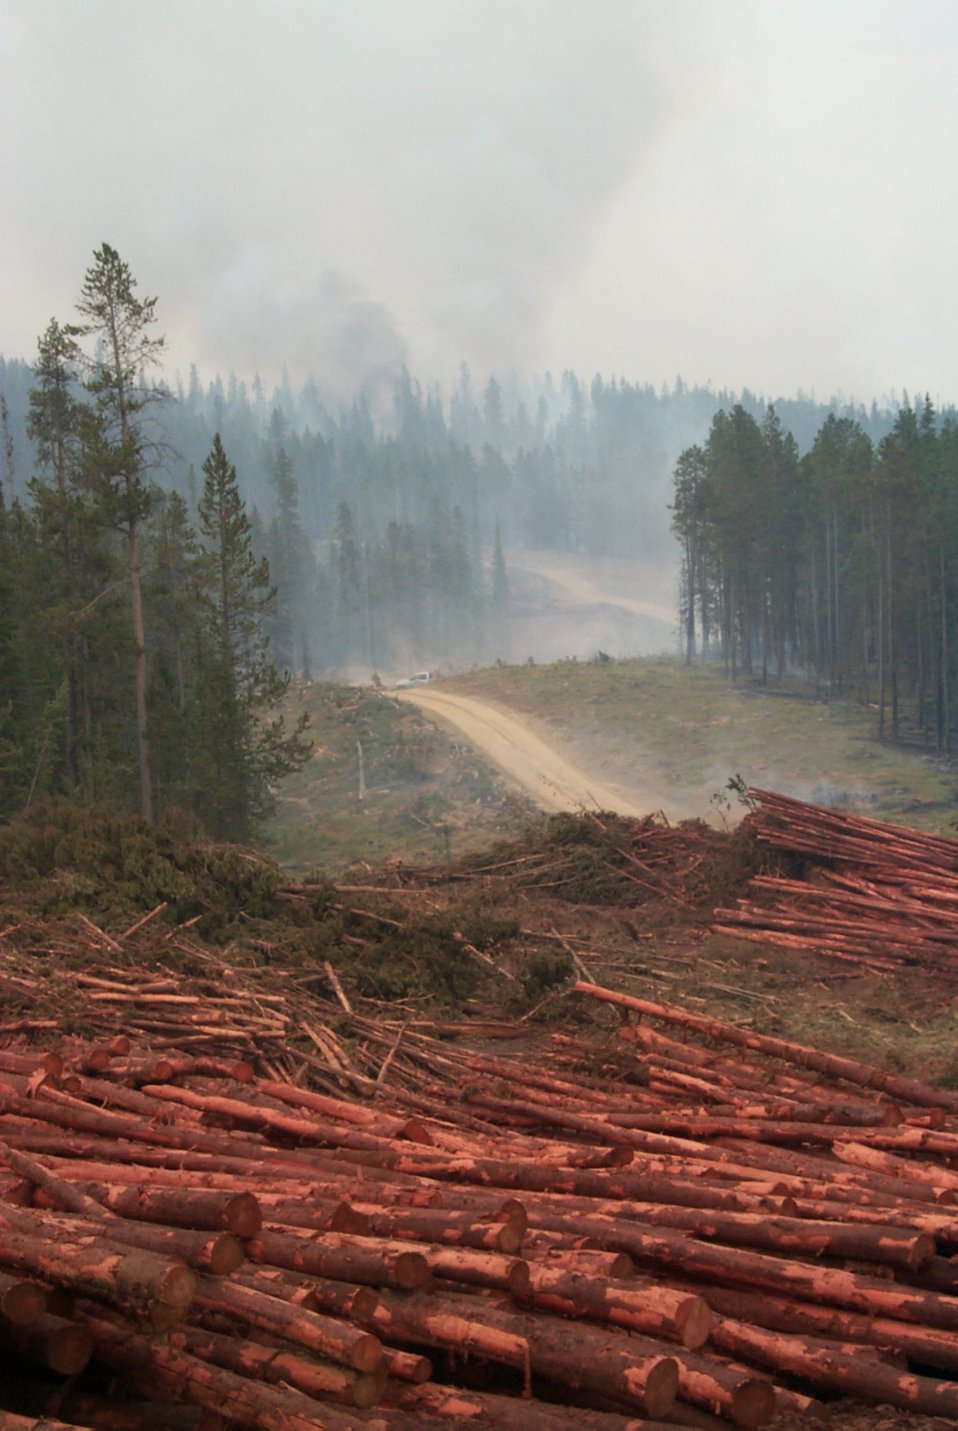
Logs Fire Clearwater Fire Salmon Field Office USRD Upper Snake River District